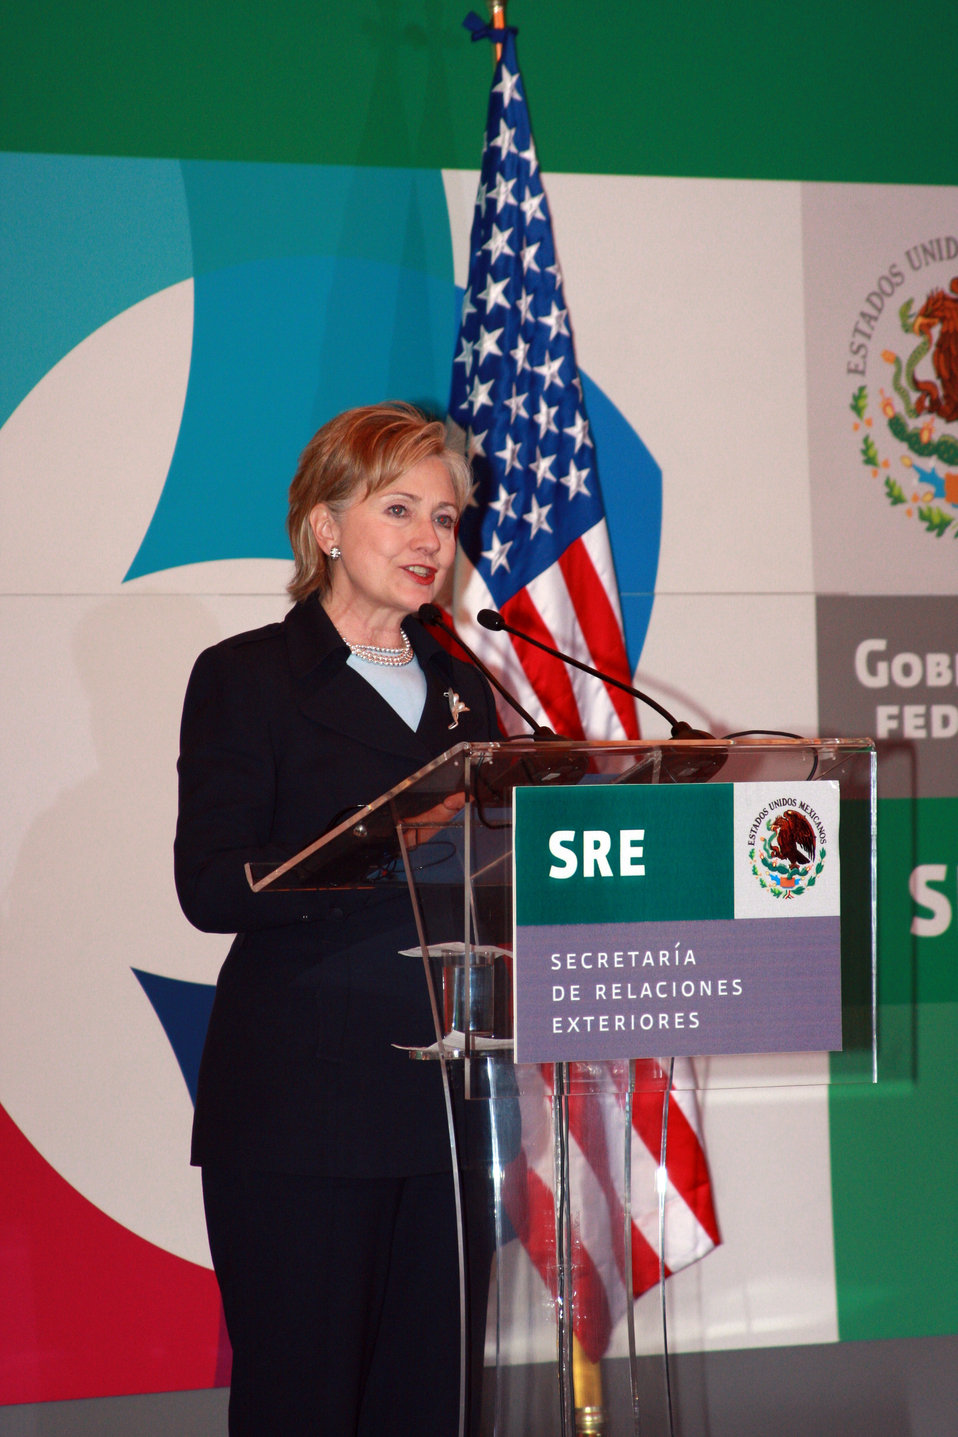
Secretary Clinton and Mexican Foreign Minister Press Conference

U.S. Secretary of State Hillary Rodham Clinton participates in a joint press conference with Secretary of Foreign Affairs Patricia Espinosa at the Mexican Foreign Ministry,Mexico City, March 25, 2009.